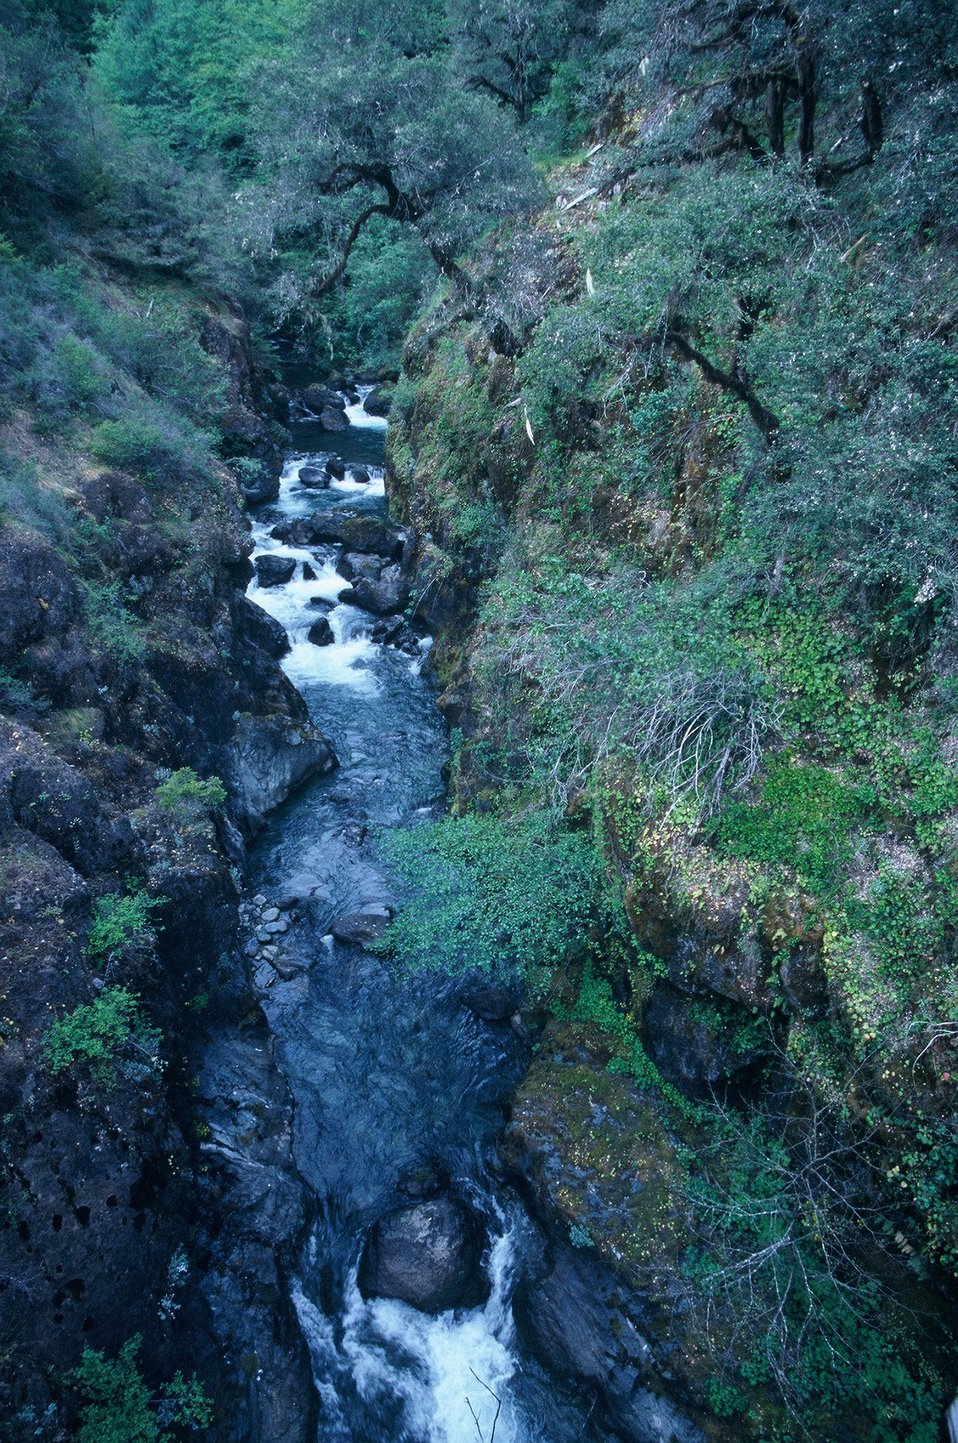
Wild section of the Rogue River from Grave Creek to Foster Bar May 19 to May 22.